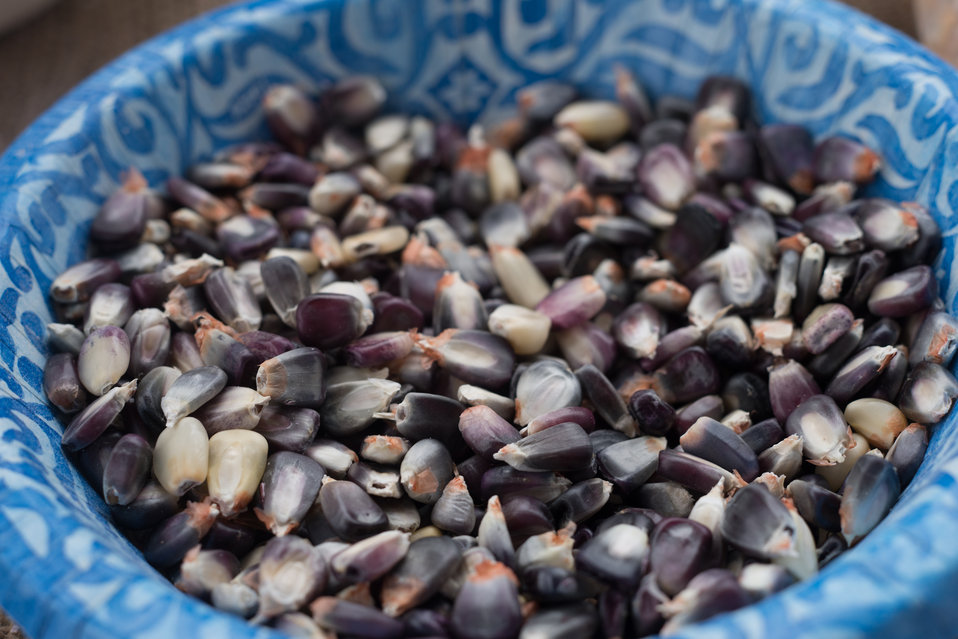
Cherokee White Eagle (Dent Corn) grown in the U.S. Department of Agriculture (USDA) Hidatsa Three Sisters Garden demonstration garden is being ground at the farmers market at the USDA Whitten Building east parking lot in Washington, DC, on Friday, November 22, 2013.